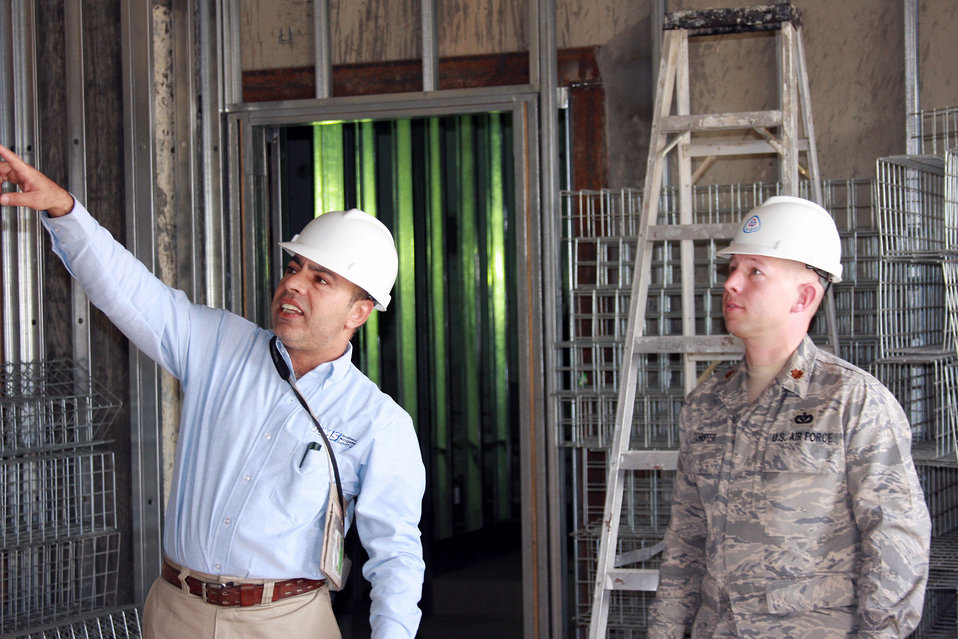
Engineer team plans Bagram's future

A civilian contractor shows Maj. Kyle Torster the progress of a current construction progress under way on the Afghanistan-based airfield. Of the many ongoing projects, a new $2.7 million Combined Joint Task Force-101 administrative building is nearing completion. Major Torster is a Bagram Airfield facility engineer team member.